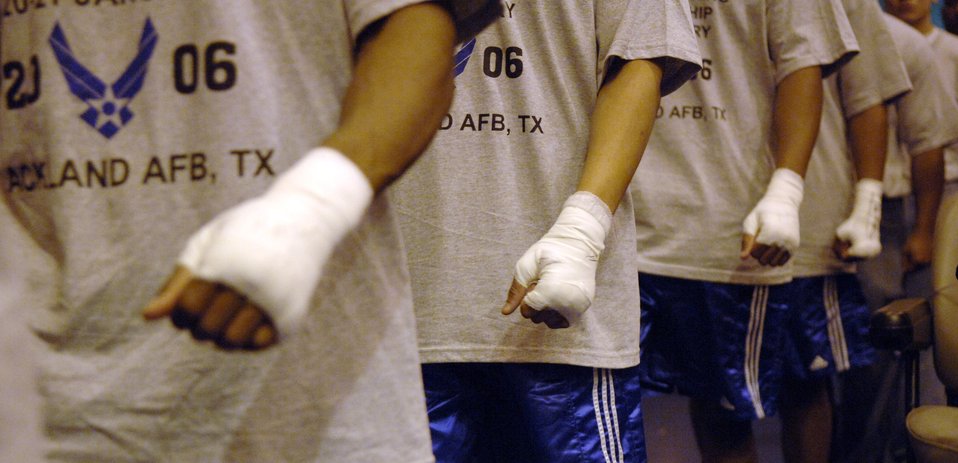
Boxing for the team

SAN ANTONIO (AFPN) -- Airmen trying out for the Air Force Boxing Team walk into the Bennett Fitness Gym before the start of the night's matches Jan. 20. The matches will help the coach pick the members to represent the Air Force at the Armed Forces Boxing Tournament at Fort Huachuca, Ariz., Feb. 6 to 11.